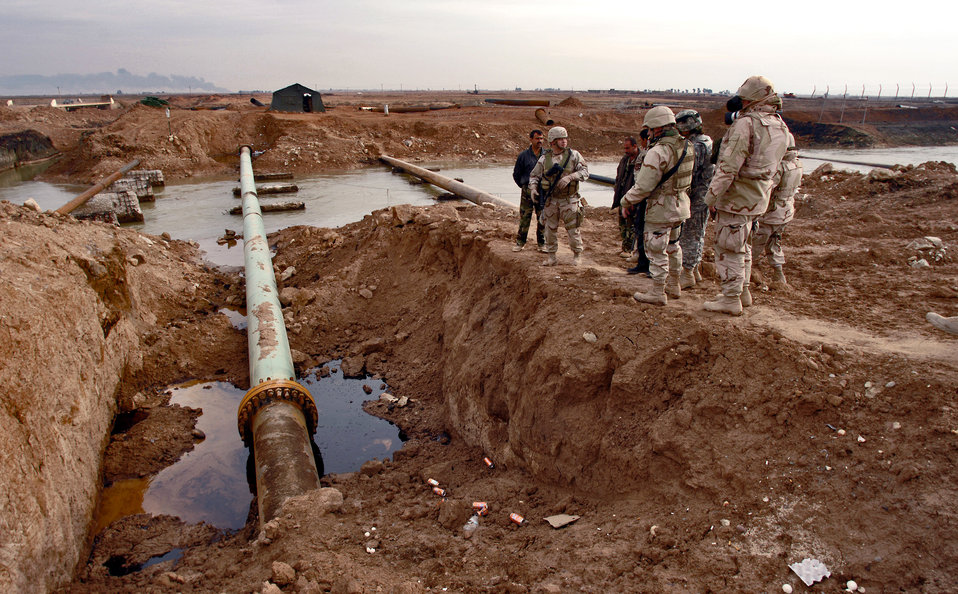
Infrastructure inspection

KIRKUK, Iraq (AFPN) -- Airmen talk to Iraqi pipeline security officials at a canal crossing. They talked about recent damage to the pipeline and security challenges. The Airmen are with the 732nd Expeditionary Civil Engineer Squadron's petroleum oil and infrastructure team, or POInT. This team is part of the Regional Reconstruction Operations Center.